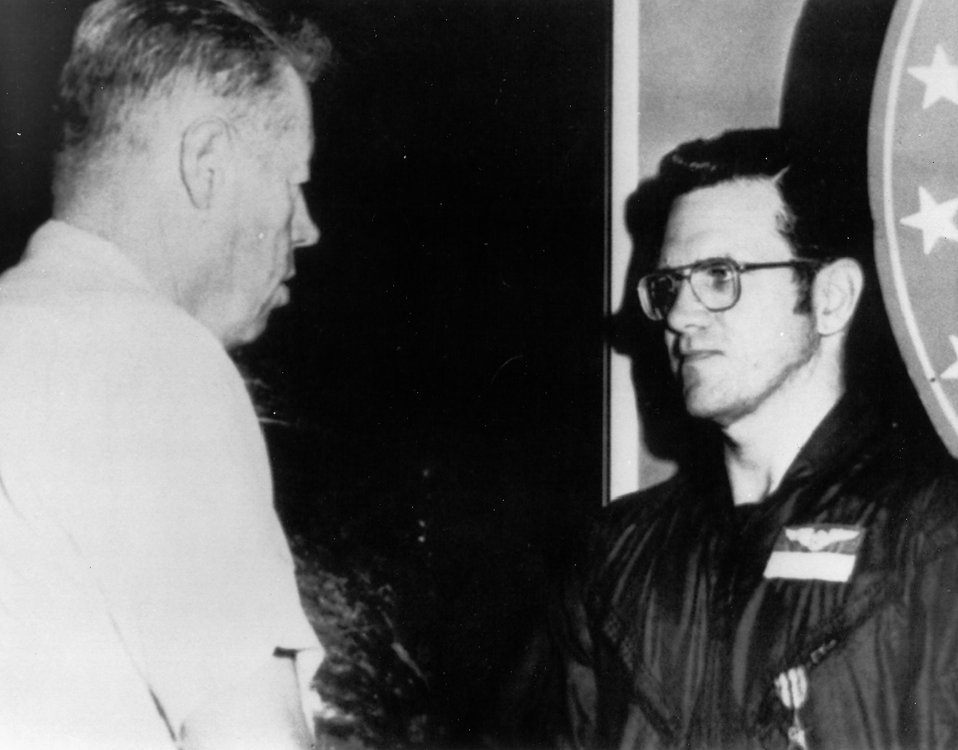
Staff Sgt. Samuel O. Turner

1970's -- On Dec. 18, 1972 near Hanoi, North Vietnam, Staff Sgt. Samuel O. Turner, a B-52 fire control operator (gunner), shot down a Mig-21. For his action the 30-year-old Atlanta, Ga. native was awarded the Silver Star.